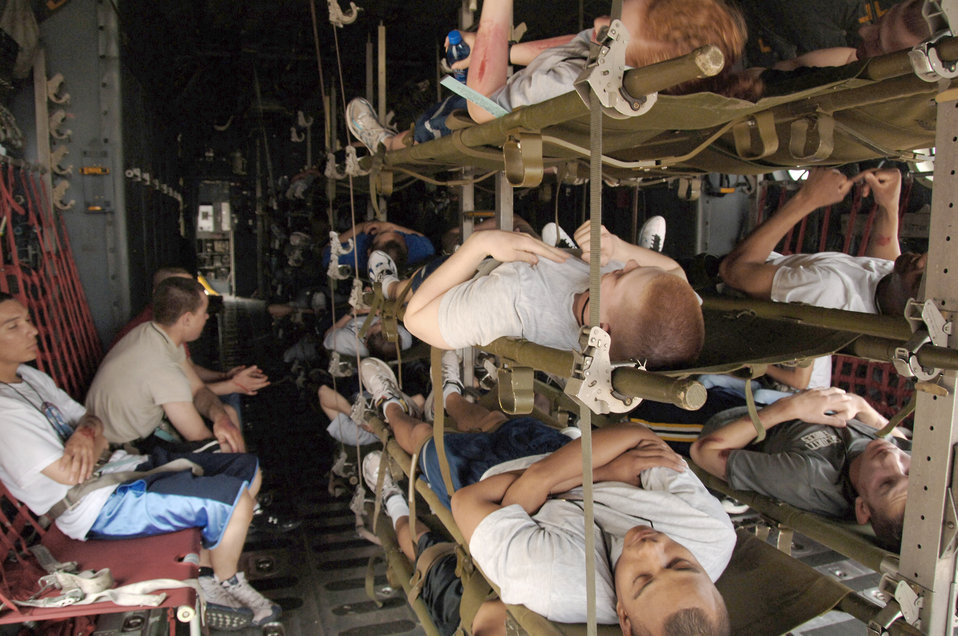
Exercise tests response

Exercise victims wait to be transported out of the C-130 Hercules by members of the 59th Medical Wing manpower team during a National Disaster Medical System exercise May 27, 2010, at Port San Antonio, Texas. The NDMS exercise had 250 participants, including 9 ambulances and 40 patients from various military and civilian agencies in San Antonio.